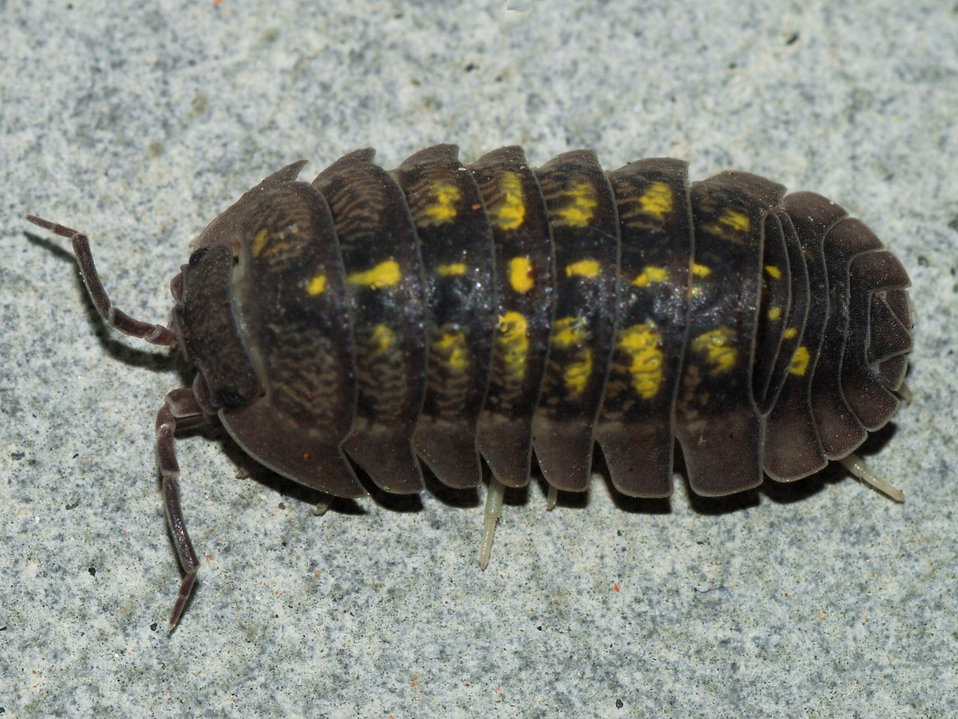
Armadillidium granulatum Brandt, 1833: Dorsal view.